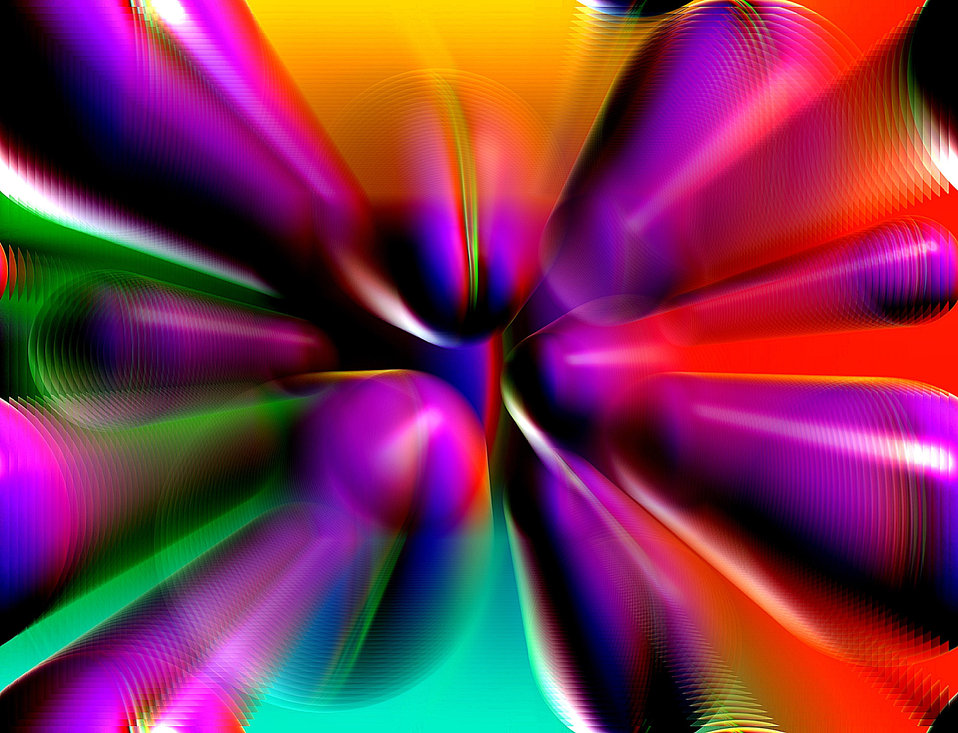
Background 505

Zoom background.